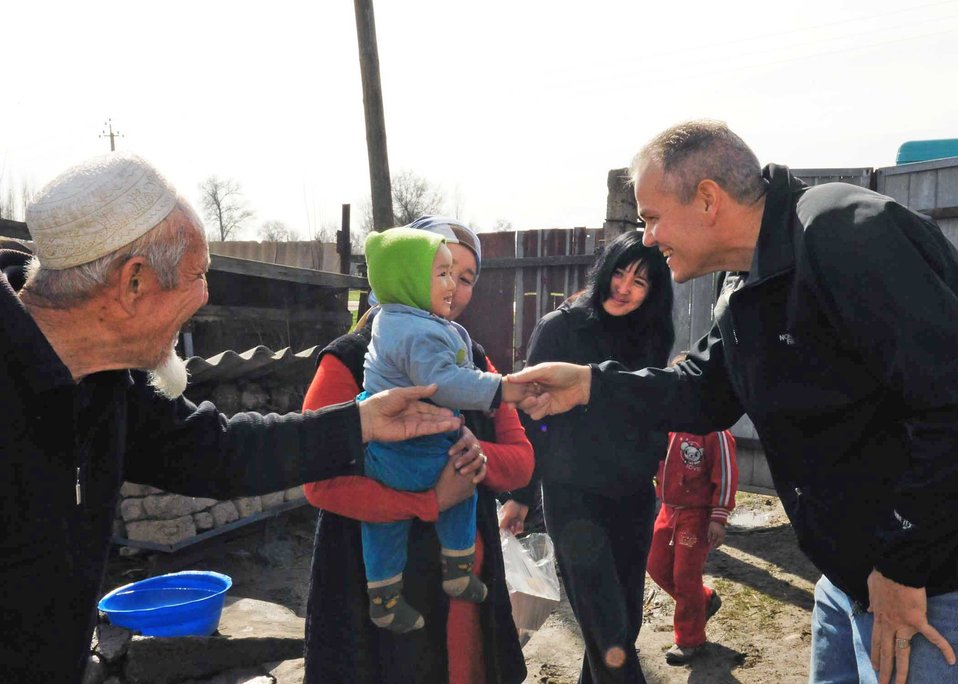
Manas Airmen deliver care packages to Kyrgyz villagers

Lt. Col. Rex Vanderwood shakes the hand of a little boy after delivering humanitarian assistance items collected from stateside bases and friends to a family March 18, 2010, in Manas Village, Kyrgyzstan. Colonel Vanderwood is the 376th Expeditionary Mission Support Group deputy commander.